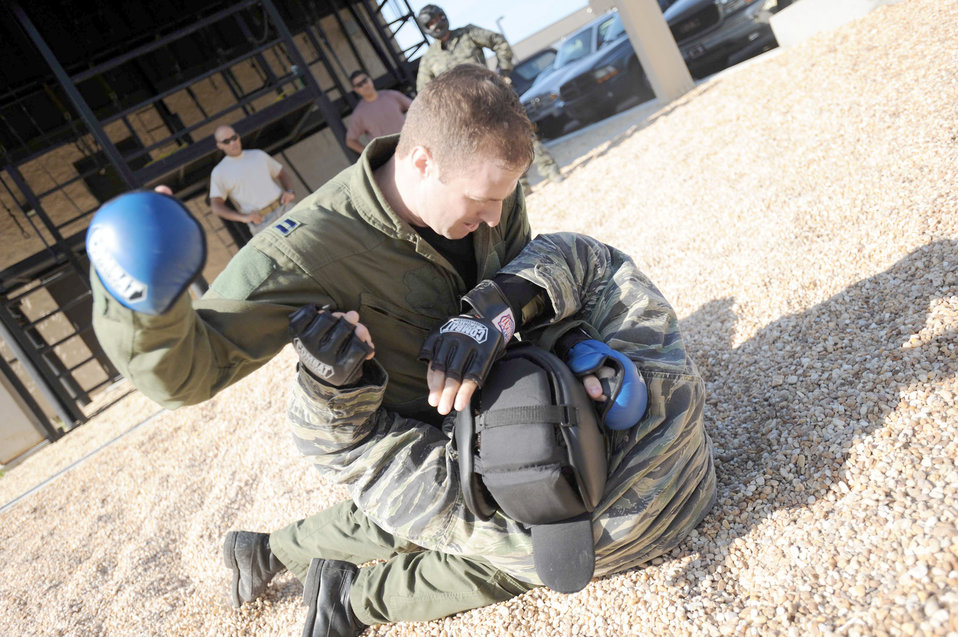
Survival Training vs. OPFOR

An Airman participating in survival, evasion, resistance, and escape live conflict training, punches a padded-up SERE specialist during combat skills training outside the SERE training center May 13, 2010, at Hurlburt Field, Fla.